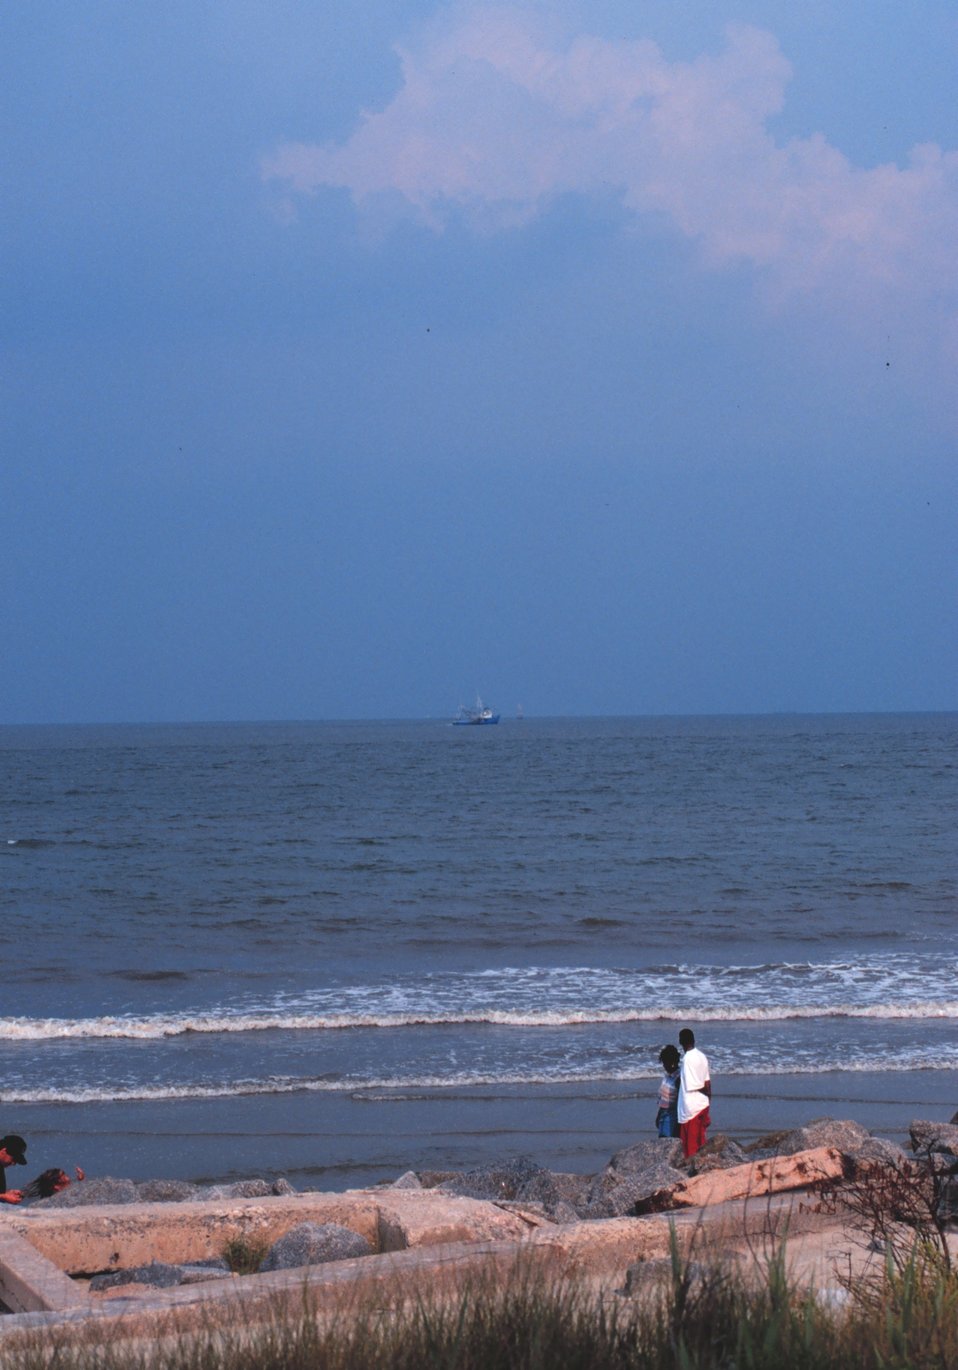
Strolling on the beach